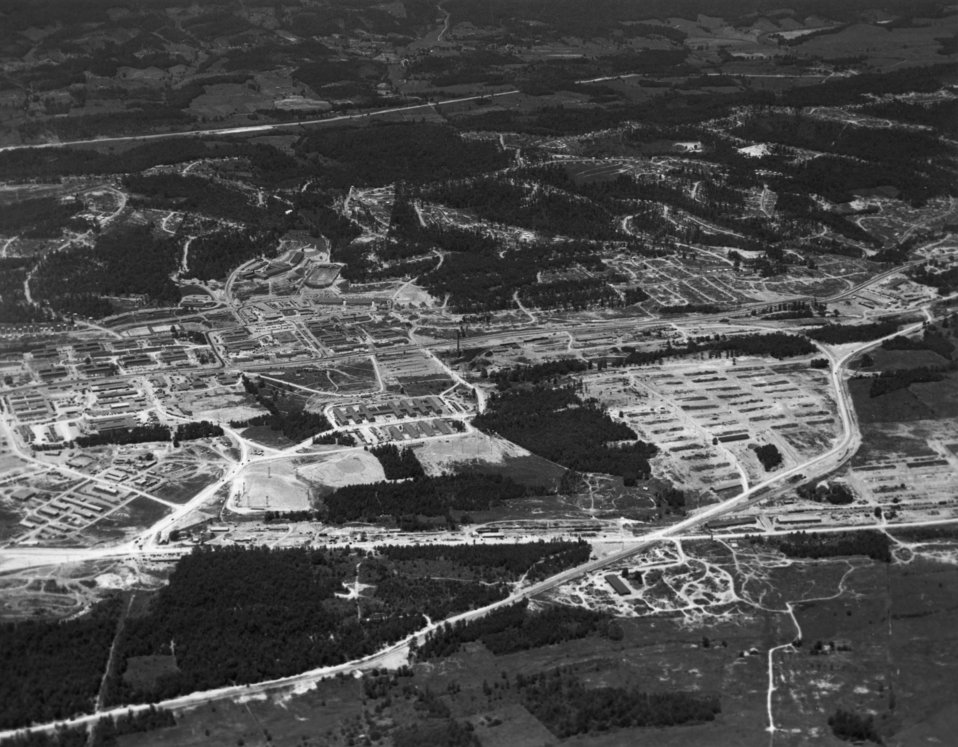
Aerial of Oak Ridge